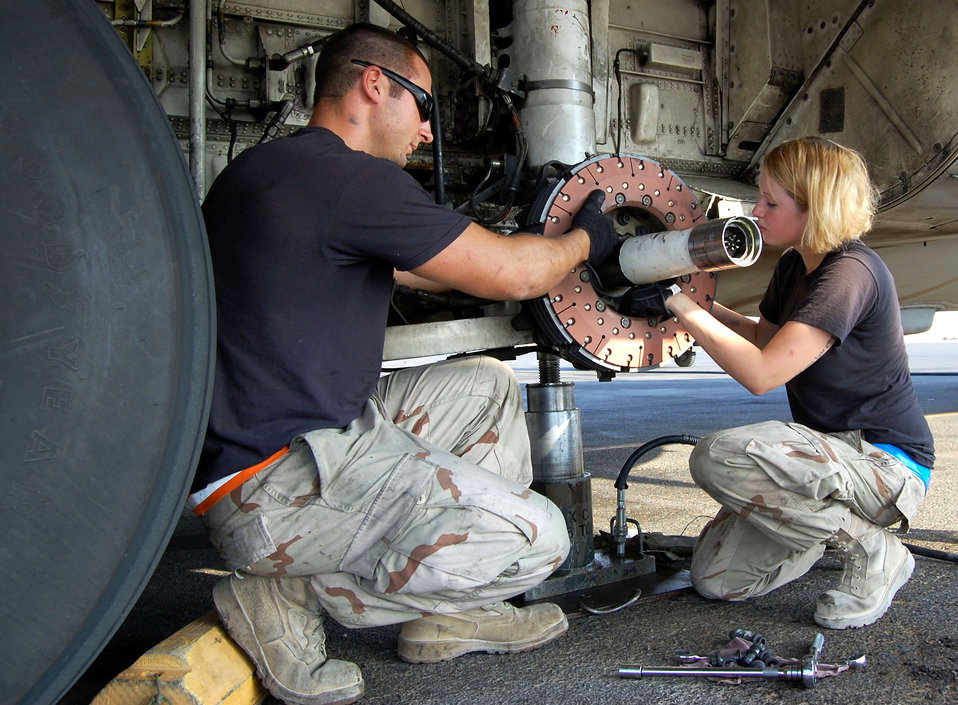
Aging C-130s: the geriatric fleet

Senior Airman Michael Bruke and Airman 1st Class Britney Warner install a multi-disc brake on a C-130E Hercules Oct. 30 in Southwest Asia. Most C-130s here have been in service since the Vietnam War. Both Airmen are crew chiefs with the 386th Expeditionary Aircraft Maintenance Squadron.